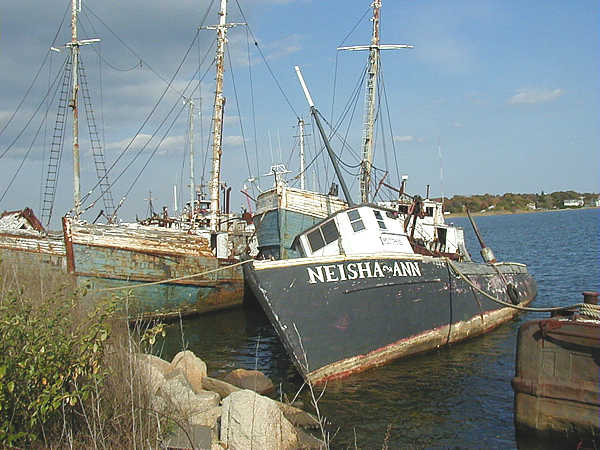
Spring 2002, A raw glimpse into the past

These boats served as a vivid reminder of New Bedford and the reputation it has earned for itself within the commercial fishing industry.

From an early settlement, to becoming the bustling whaling capital of the world, and today as a driven and innovative post industrial city, New Bedford has gone through tremendous changes throughout its history.

While these ships were left behind, as a remnant of part of the past, theres no doubt that each one helped make New Bedford what it is today.